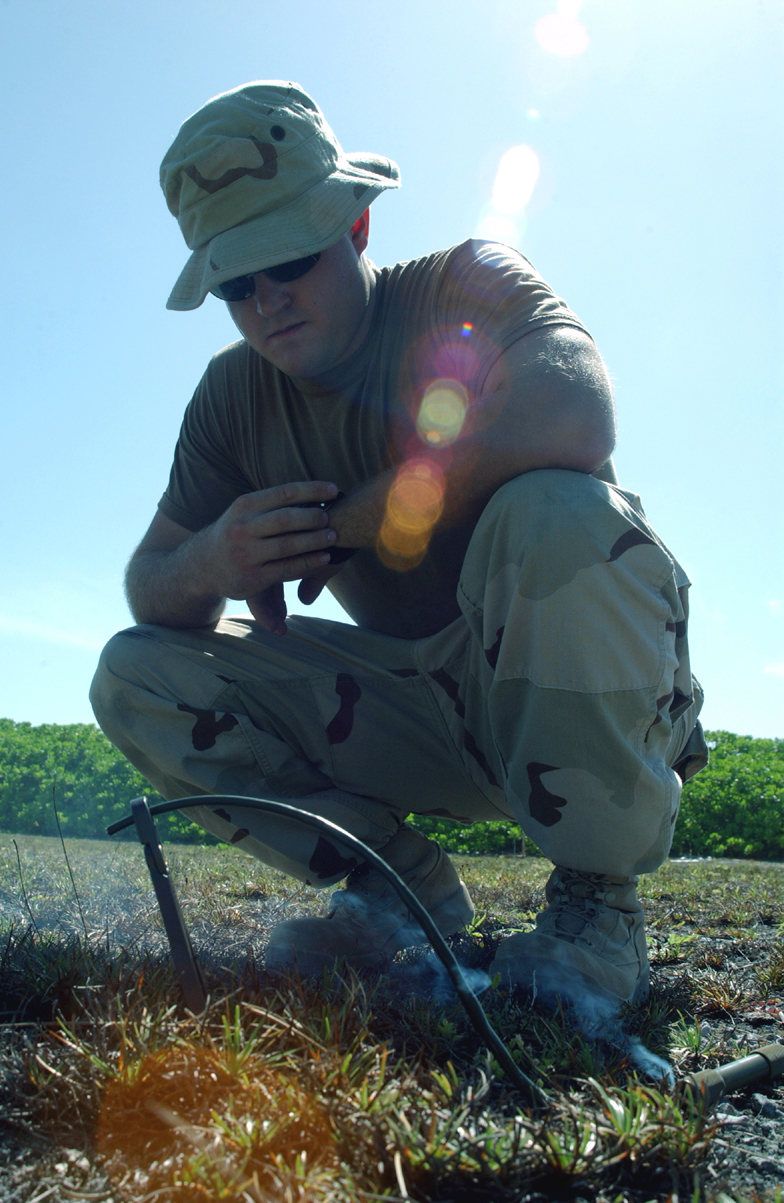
Making every second count

OPERATION ENDURING FREEDOM -- Senior Airman Phillip Dyer tests a fuse during training at a forward-deployed location Aug. 24. The test lets the operation supervisor calculate detonation time. Airman Dyer is an explosive ordnance disposal technician with the 40th Expeditionary Civil Engineer Flight. He is deployed from Nellis Air Force Base, Nev.